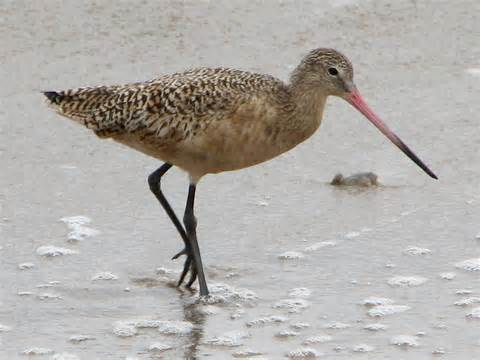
Bird Count

A marbled godwit searches for his lunch along the edge of prairie wetlands.